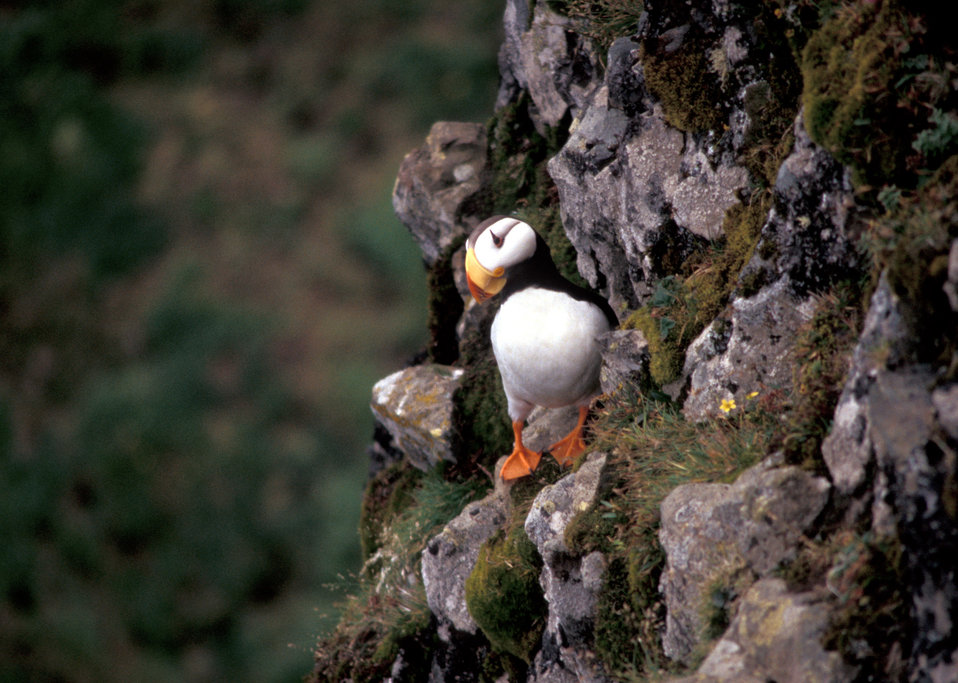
Puffin

Horned puffin, Hall Island.